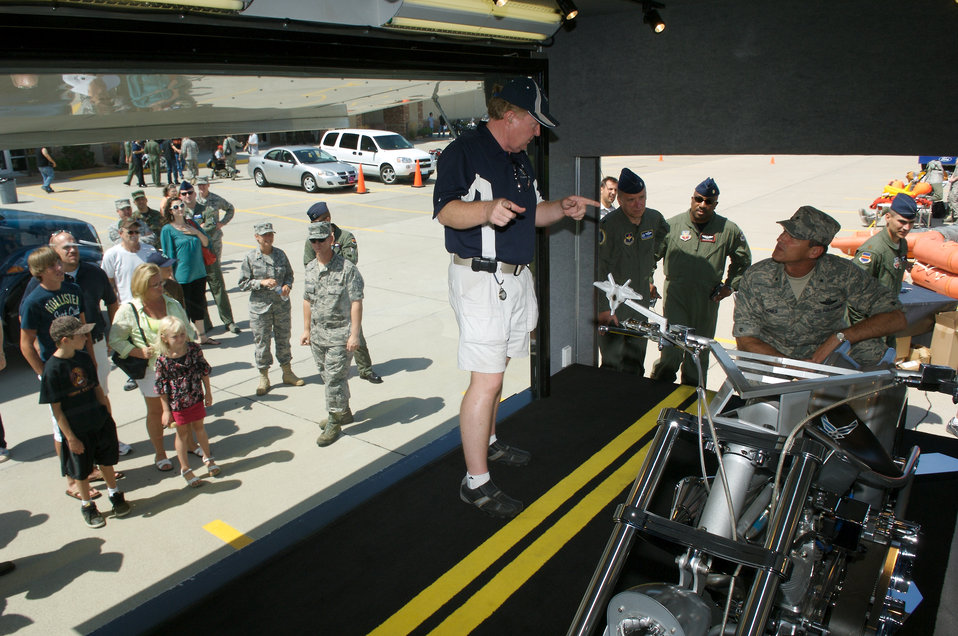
Hog wild

While public visitors look through the big picture window on the left, Don Mackey (left), talked with Brig. Gen. James J. Jones about the Air Force Orange County Chopper on display Aug. 14 at Dillon Brothers Harley-Davidson for Air Force Week in the Heartland in Omaha, Neb. Mr. Mackey manages the display and is one of two people who represent the Air Force on the title of the motorcycle. General Jones is the commander of the 55th Wing at Offutt Air Force Base, Neb. Built in 2005, the chopper has a 131 cubic inch engine that generates 150 horsepower. From end to end it stretches 10 feet 3 inches. It features a six-speed Baker right-hand drive that puts power to the 300 series Avon Venom rear tire. The color scheme is based on the F-22 Raptor.